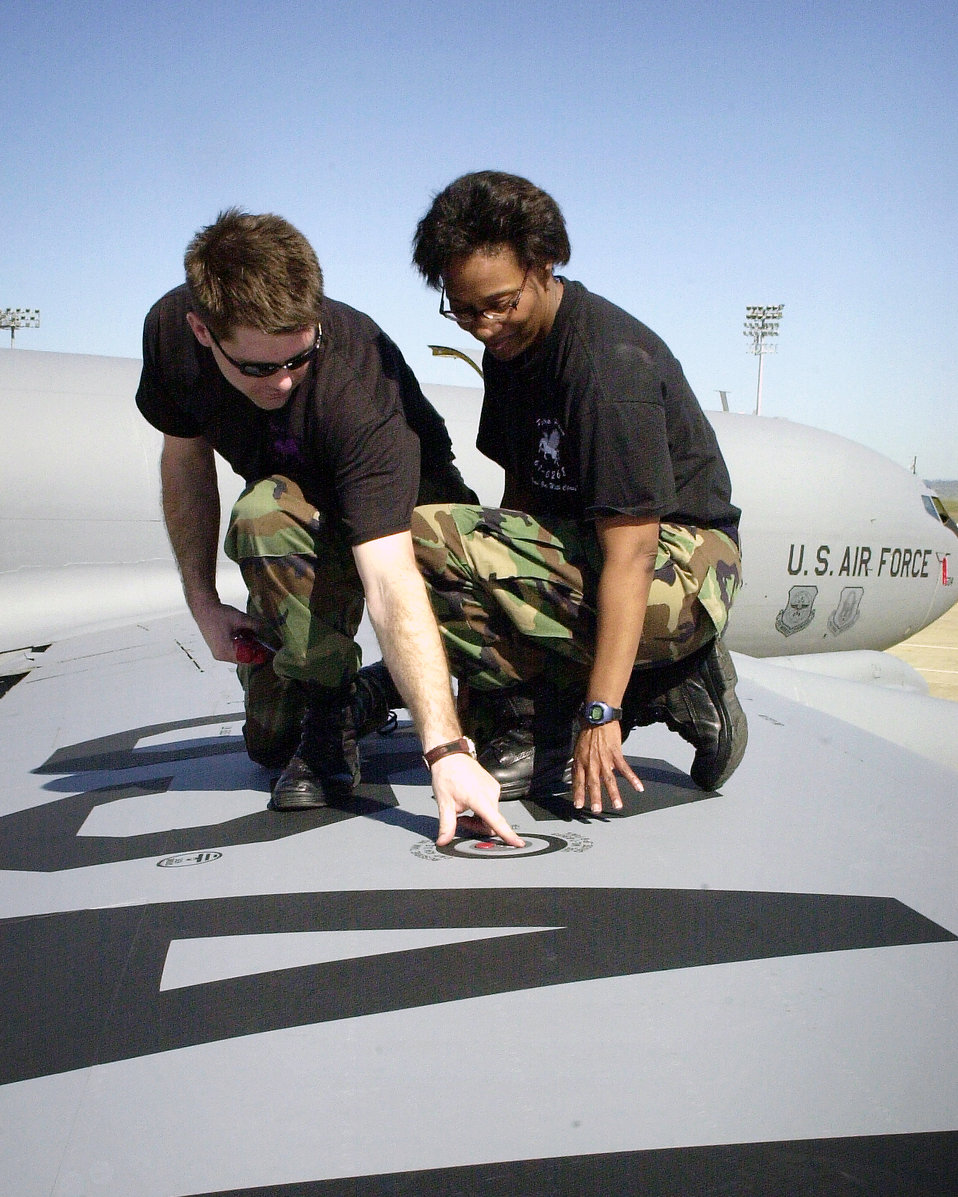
Noble Ealge

BEALE AIR FORCE BASE, Calif. -- Tech. Sgt. Joseph Hoy (left) explains the details of a preflight panel inspection of a KC-135 Stratotanker to Staff Sgt Alison Baker, a crew chief in training here March 7. Seargent Hoy and Sgt. Baker are both crew chiefs with the 940th Aircraft Maintenance Squadron. The 940th Air Refueling Wing here participates in Operation Noble Eagle missions by providing aerial refueling where ever and when ever it is needed in the western region of the United States.